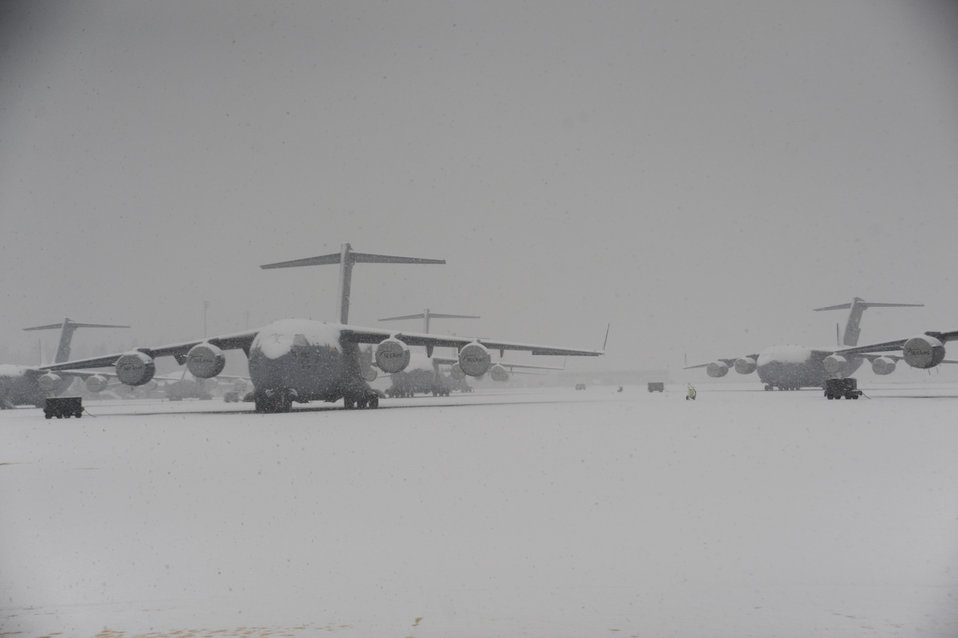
Ice, ice, ice

The first snowfall of the season at Joint Base Lewis-McChord, Wash., Nov. 22, 2010, covered the aircraft and the flightline in a sea of white. Despite the snowfall, McChord Airmen worked to generate five sorties.